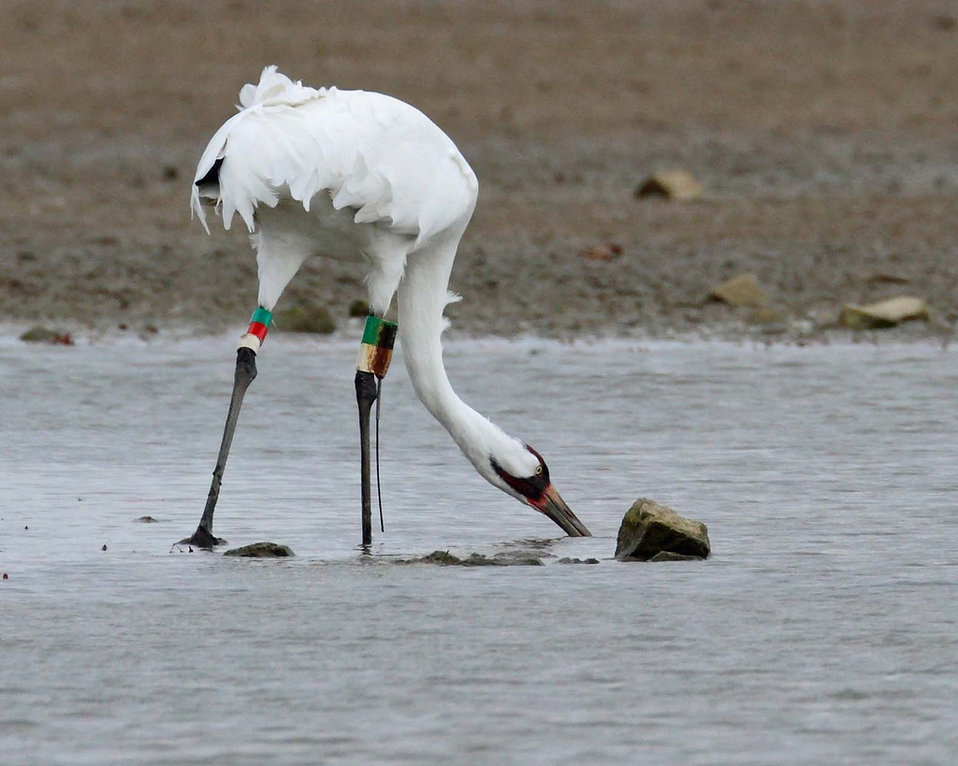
whooping crane

endangered
Patokah River National Wildlife Refuge, IN
Photo: Steve Gifford/USFWS
Many refuges are directly involved in whooping crane recovery work, including Necedah and Horicon NWR in WI, Chassahowitzka NWR in FL, Wheeler NWR in AL and Aransas NWR in TX. Other refuges provide critical stopovers during the cranes' spring and fall migrations